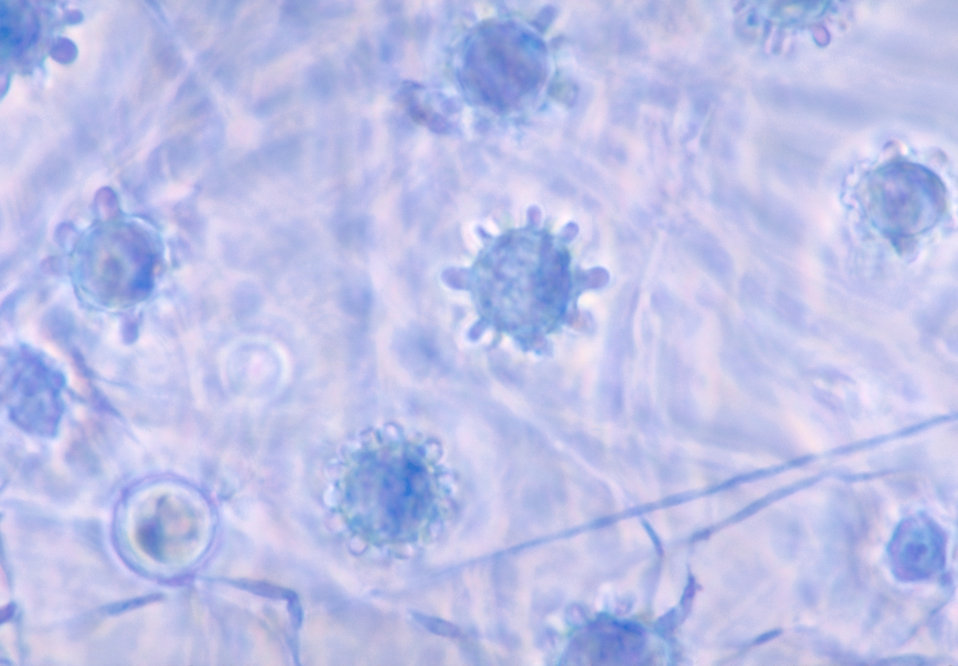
This photomicrograph reveals a number of macroconidia of the fungus Histoplasma capsulatum.